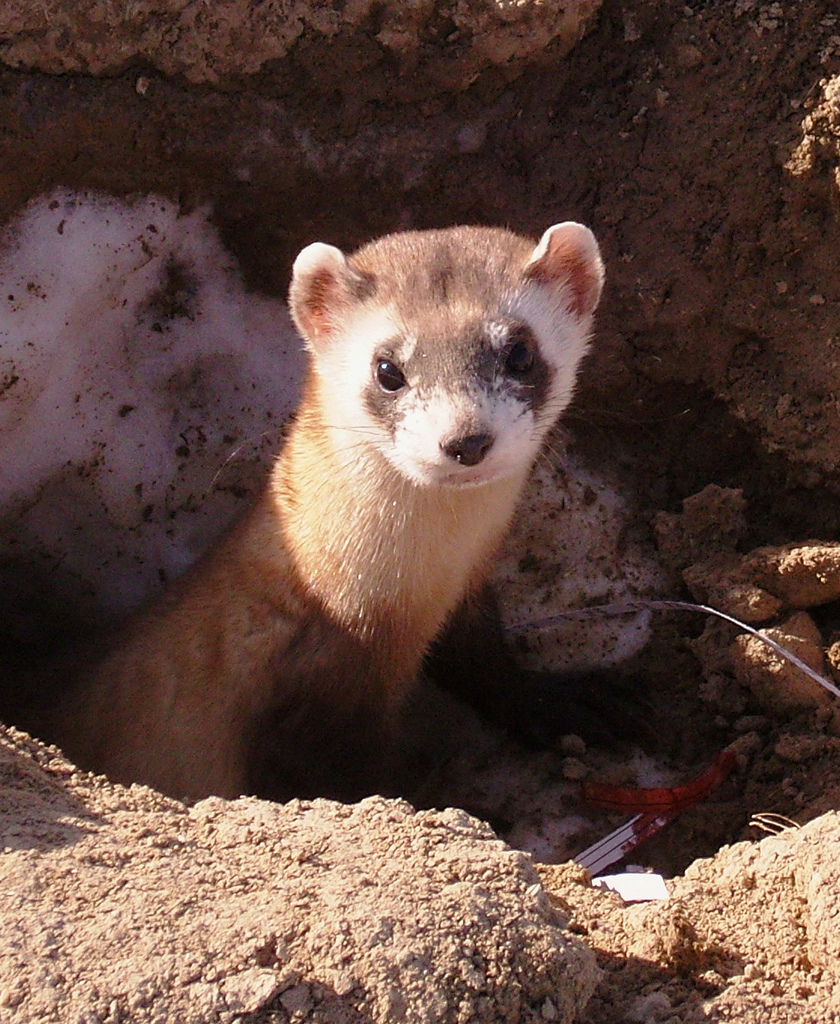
black footed ferret

endangered
Photo: USFWS
The National Black-footed Ferret Recovery Center in CO raises this critically endangered prairie for release to the wild at sites around the West, including Charles M. Russell National Wildlife Refuge in MT.